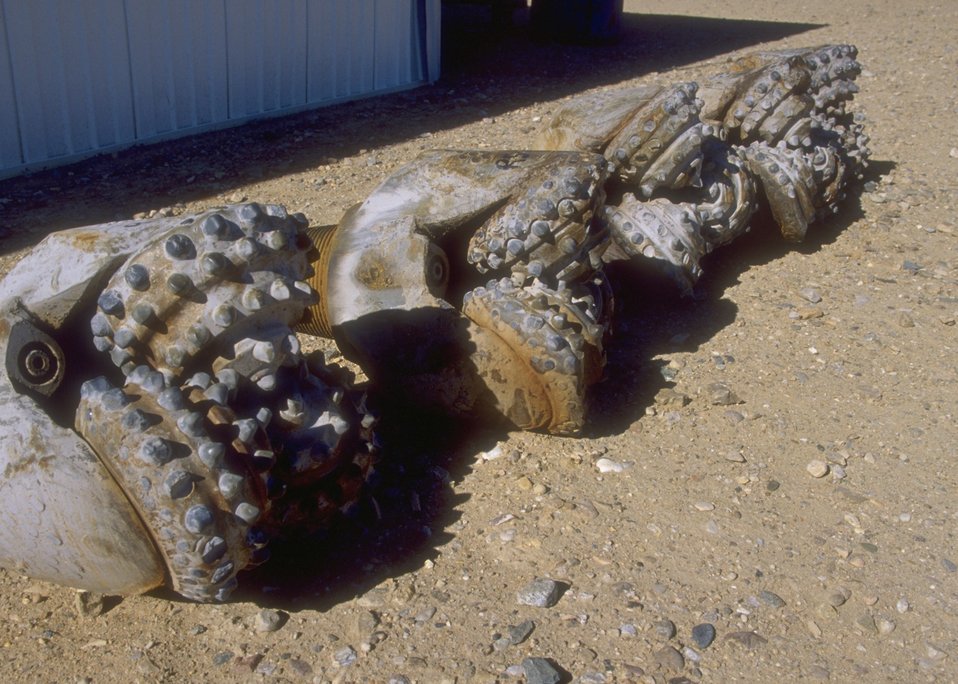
Worn out drill bits used on the Burlington Northern deep well drilling rig, Casper Field Office.